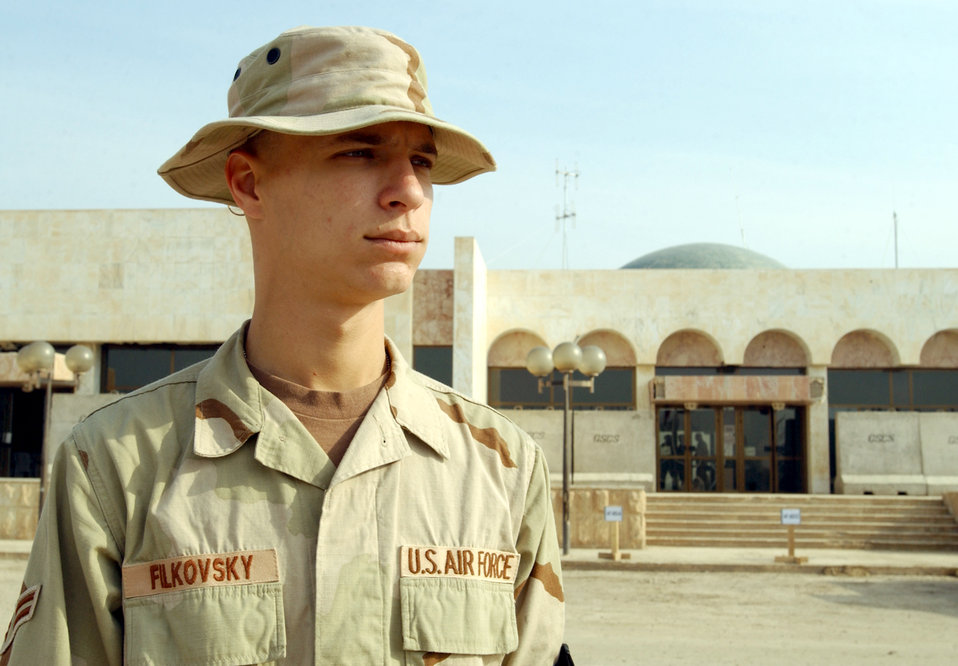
Airman puts sencond language in use

BAGHDAD INTERNATIONAL AIRPORT, Iraq -- Airman 1st Class Eyal Filkovsky translated for 447th Expeditionary Medical Squadron physicians Jan. 3, when three Bulgarian soldiers were injured when a suicide bomber drove a fuel truck into a building. Airman Filkovsky is assigned to the 447th Air Expeditionary Group here.